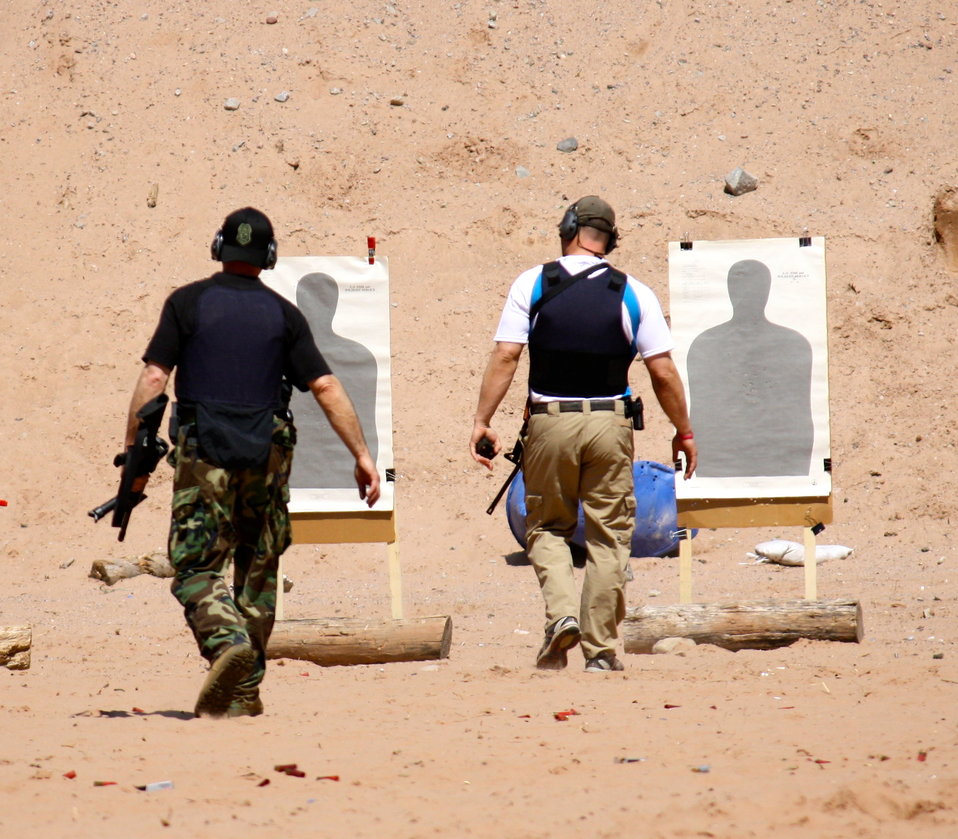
Agents and Targets

Law Enforcement target practice at outdoor shooting range in Glastonbury, CT.